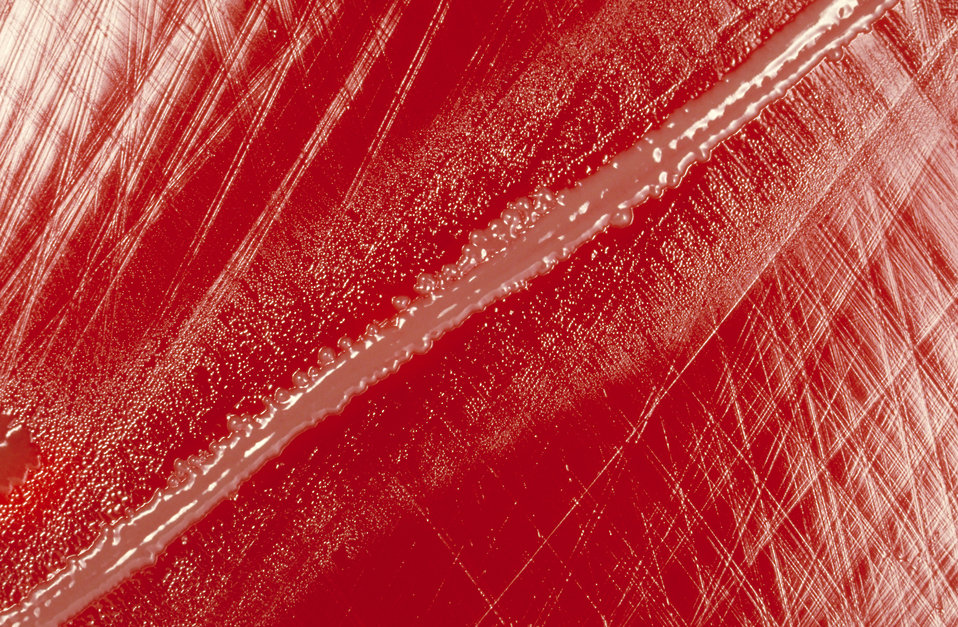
Haemophilus influenzae satelliting around Staphylococcus aureus.